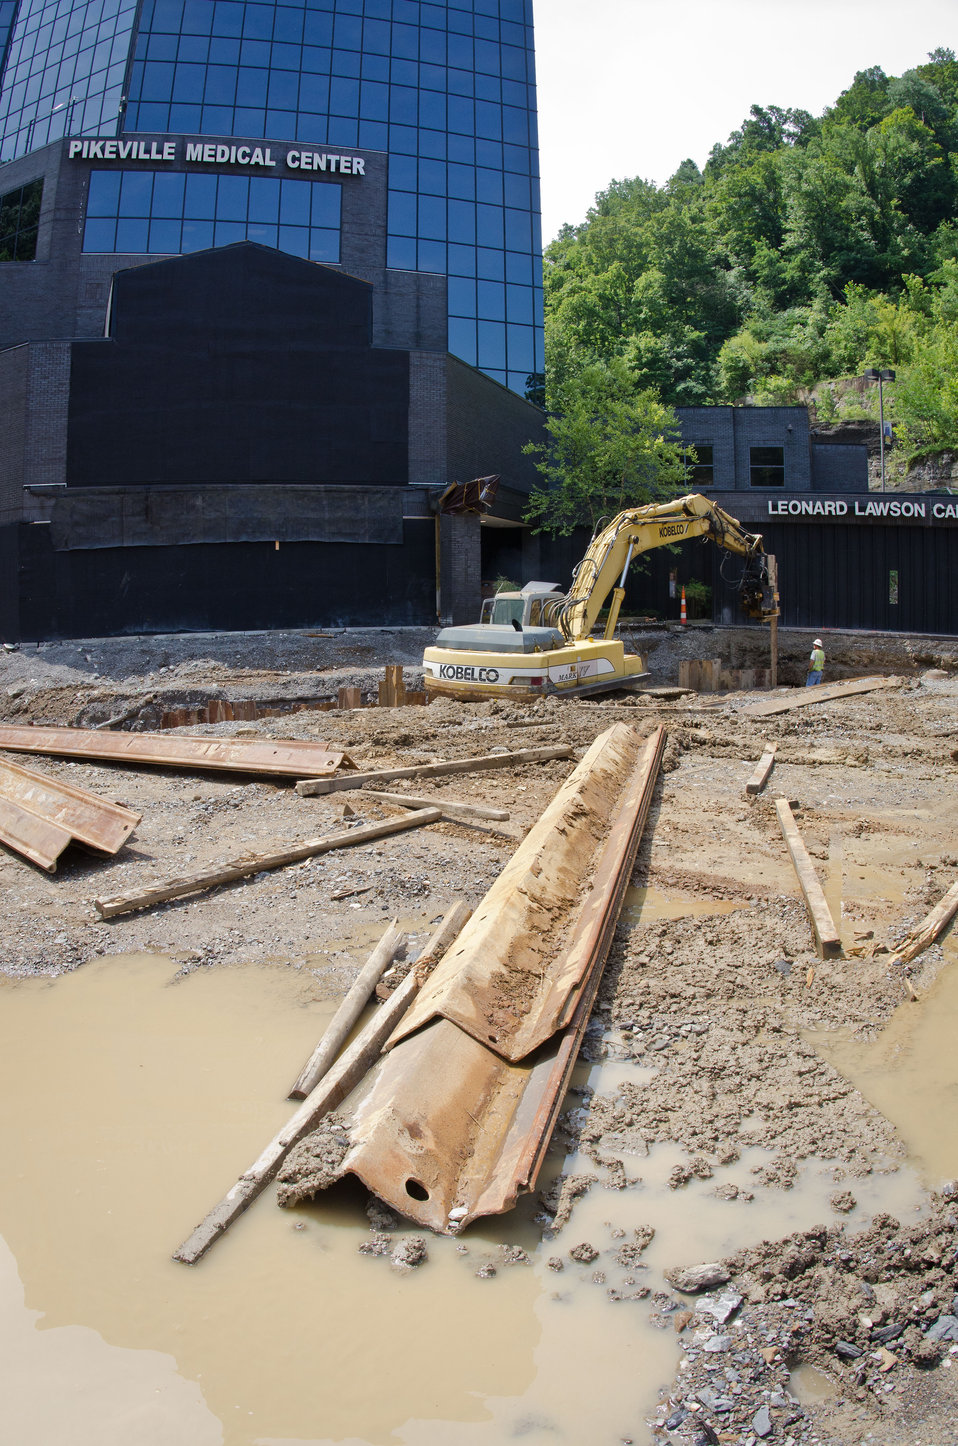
Above ground construction phase of Pikeville Medical Center (PMC) expansion project, on Tuesday, July 12, 2011, in Pikeville, KY. After months of infrastructure construction and rain delays, one of Kentucky’s largest American Recovery and Reinvestment Act (ARRA) projects is under way. The $44.6 million Community Facilities Loan will finance construction of a new medical office building and parking garage.